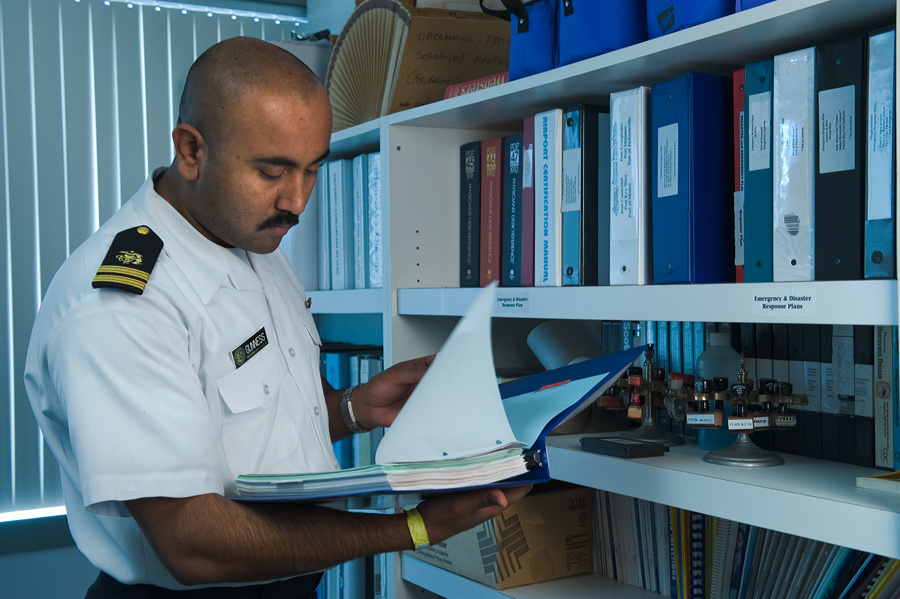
This image was captured during an October 2008 Preparedness Exercise involving a number of Federal and local agencies, including the Centers for Disease Control and Prevention (CDC).